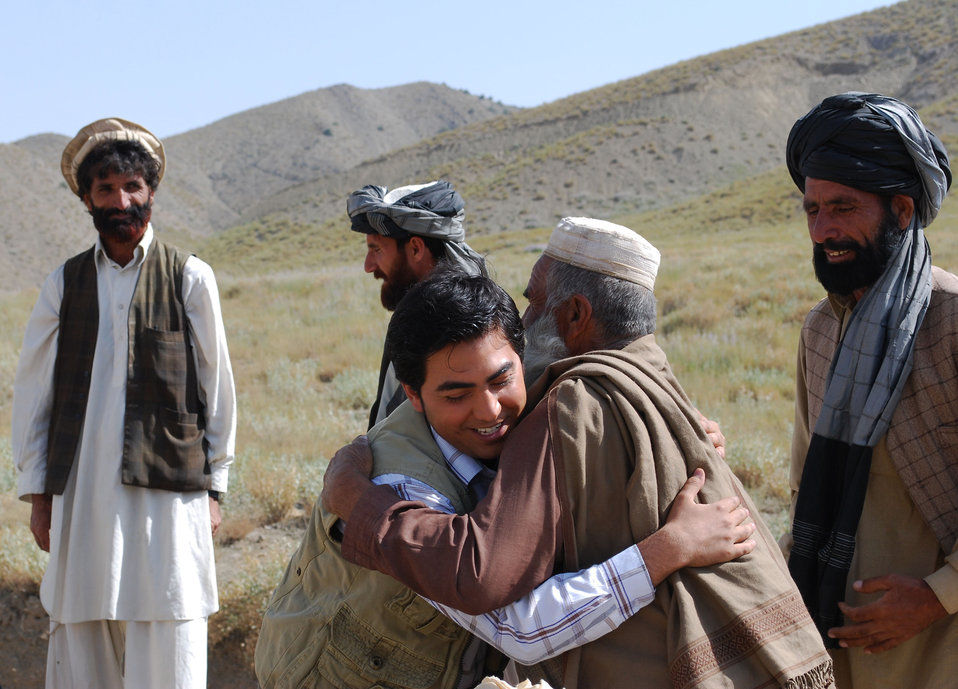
'On the Road' in Paktya Province